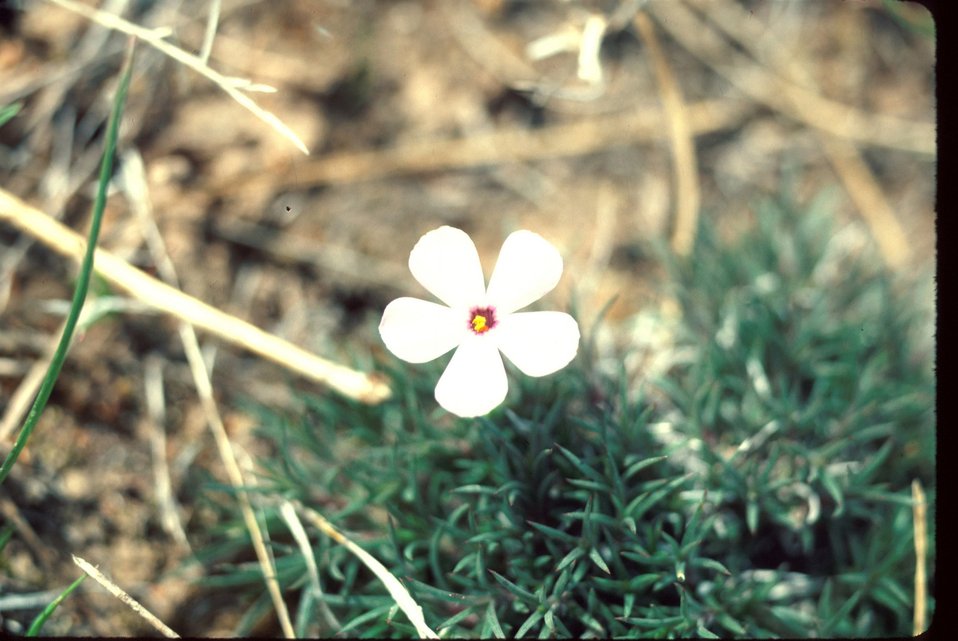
Phlox Wildflower